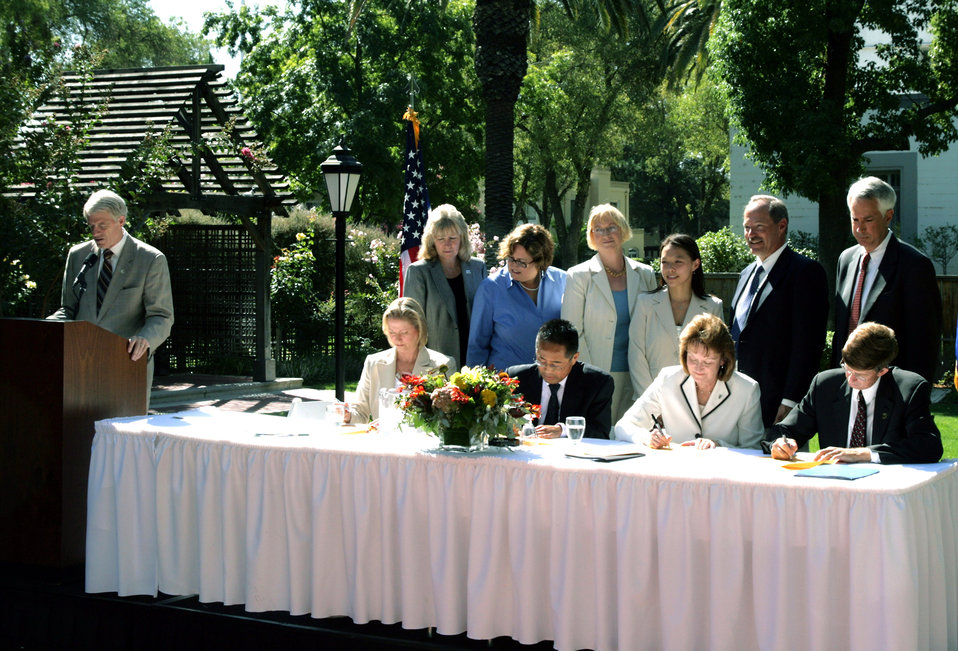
McClellan Park celebrates base closure milestone

Sacramento County Supervisor Roger Dickinson (left) reads the ceremonial scroll Aug. 27 at the former McClellan Air Force Base in California. The ceremony marked the first time in the nation the military funded an early transfer with privatized remediation at a National Priority List site. Copies of the scroll are signed by (from left, front row): Linda Adams of the California Environmental Protection Agency, Kieth Takata, EPA Region 9, Kathryn Halvorson of the Air Force Real Property Agency, Don Nottoli of the Sacramento County Board of Supervisors, and (from left, back row): Pamela Creedon of the California Regional Water Quality Control Board, Maureen Gorsen of the California Department of Toxic Substances Control, Kathleen Johnson and Yvonne Fong of the EPA Region 9, Phil Mook of the AFRPA, and Rob Leonard of the Sacramento Department of Economic Development.